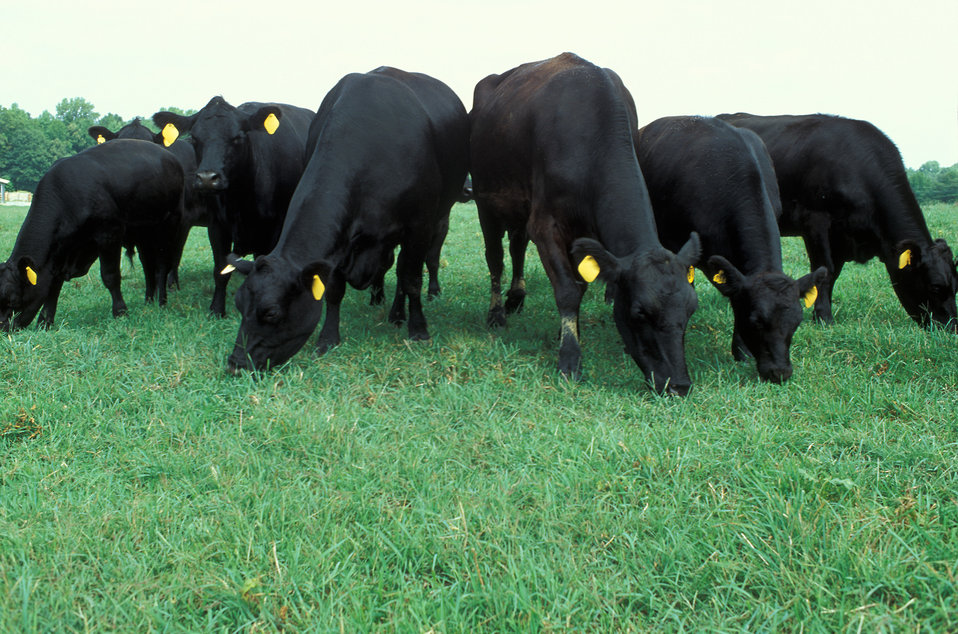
Angus cattle graze in a pasture.